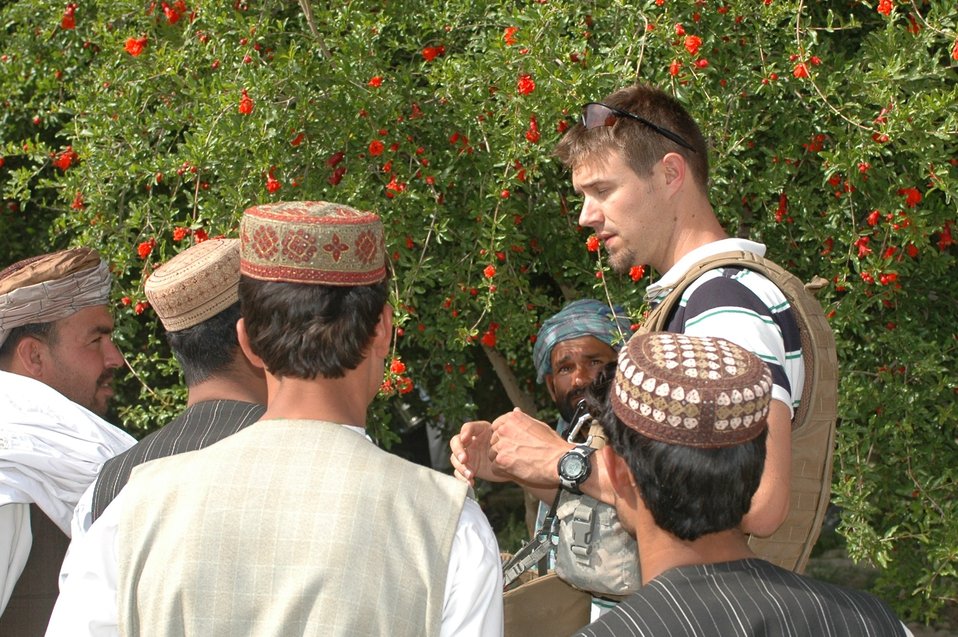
Dr Shah Visits Argandab April 10, 2010